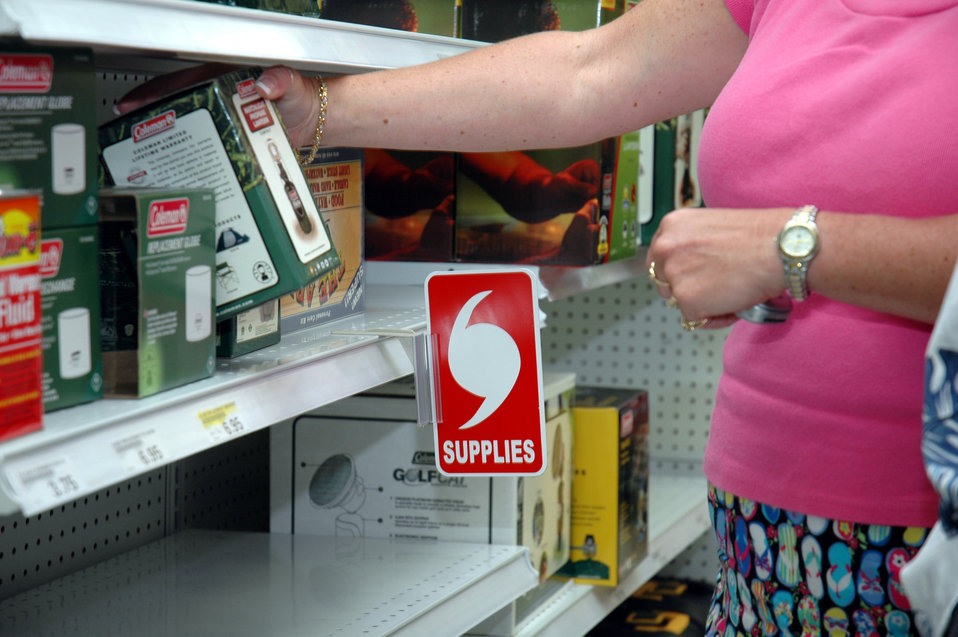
Hurricane Dennis eyes Gulf Coast

EGLIN AIR FORCE BASE, Fla. -- Hurricane supplies are in high demand at the base exchange here as Hurricane Dennis churns into the Gulf of Mexico heading for the Emerald Coast. Airmen and their families had to deal with long lines at the commissary, base exchange and gas pumps as they either stocked up on supplies to weather the storm or made last minute purchases before evacuating the area July 8.